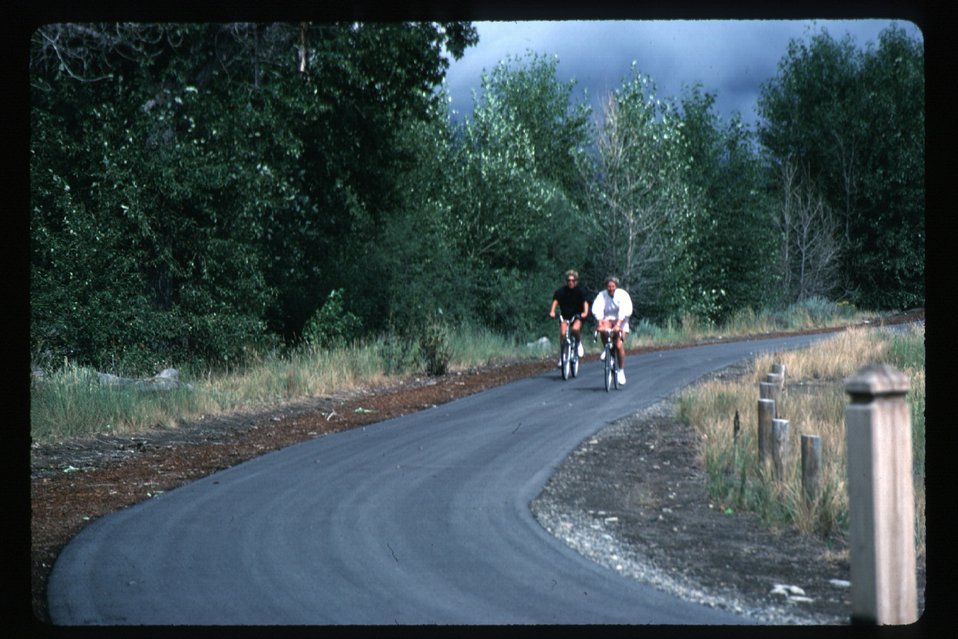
Recreation Scenic Biker Shoshone Field Office USRD Upper Snake River District